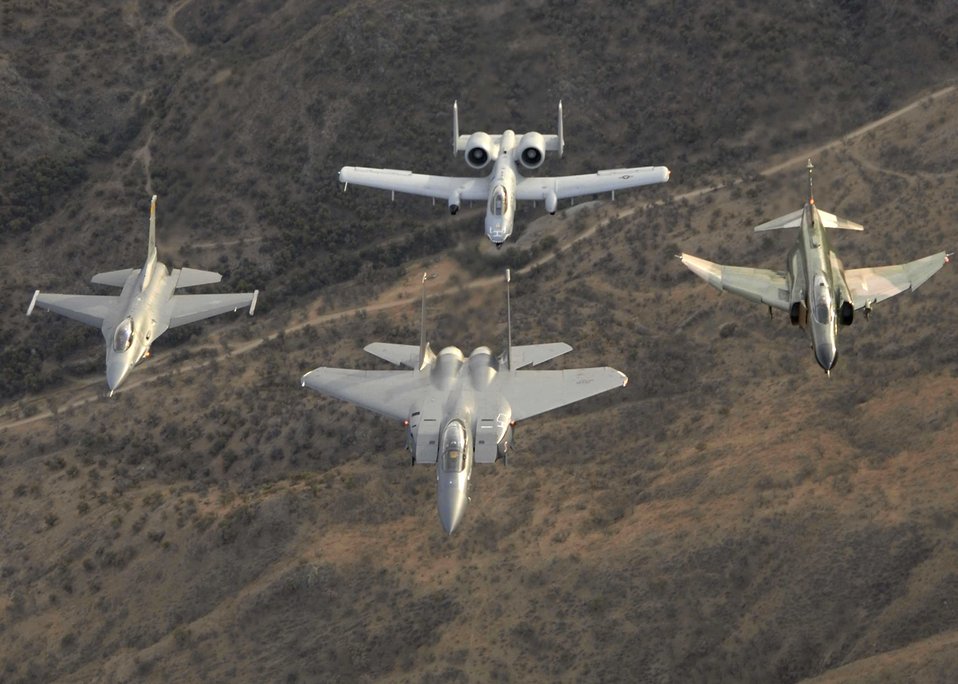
Heritage flight

An F-16 Fighting Falcon (left), F-15 Eagle (front), F-4 Phantom (right) and an A-10 Thunderbolt II (back) fly in a diamond formation over Tucson, Ariz., Sunday, March 5, 2006, during the 2006 Heritage Conference. The conference combines different U.S. aircraft from more than 60 years of aviation history to ensure certification in performing air shows worldwide.